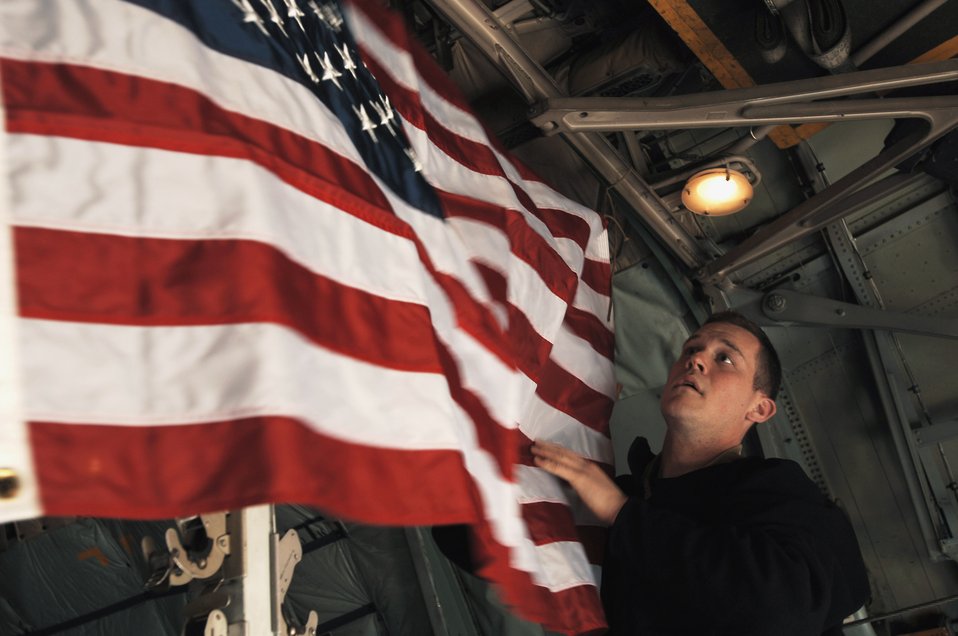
Flying the flag

First Lt. Matthew Macfarlane, a C-130 pilot with the 737th Expeditionary Airlift Squadron, hangs up an American flag in the cargo area of a C-130 Hercules Feb. 4, prior to takeoff. The flag, belonging to one of his former ROTC instructors, is being flown during a mission over Iraq.